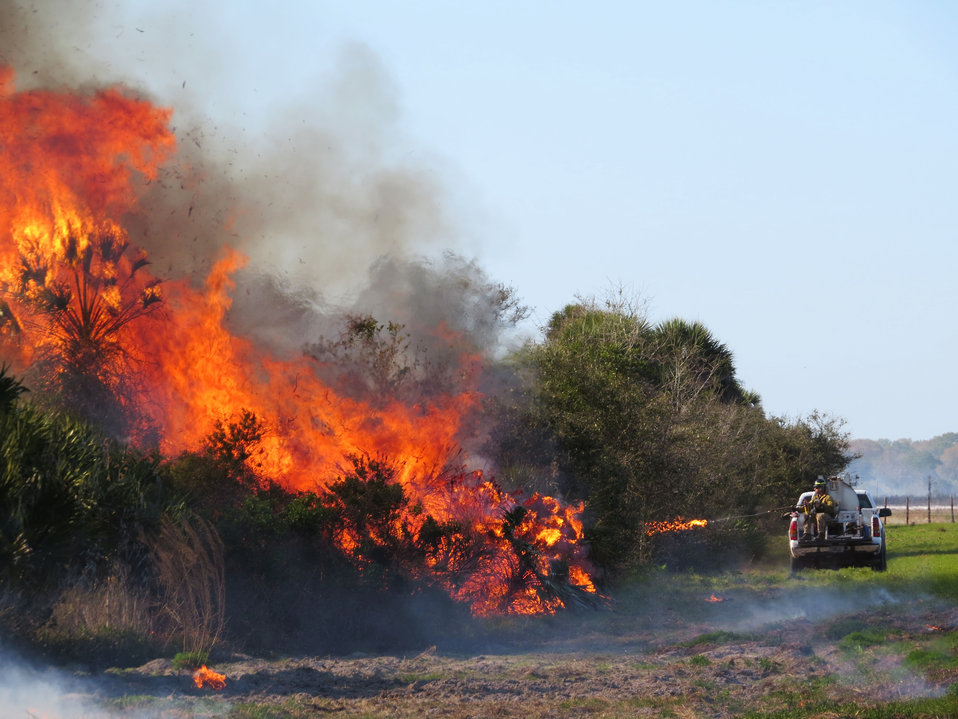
Merritt Island RX Fire Unit 4.2 03/08/14

USFWS firefighters conduct a prescribed fire at Merritt Island NWR just east of the refuge office south of the Max Brewer Parkway and west of the NASA Shuttle Landing Facility.